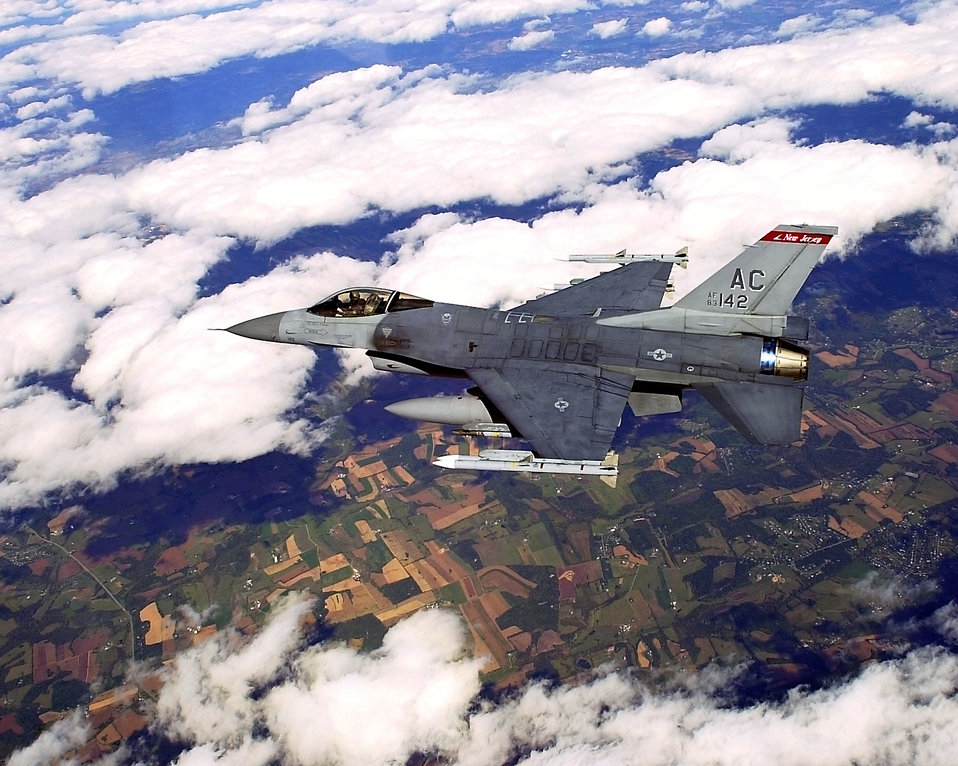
CAP

OPERATION NOBLE EAGLE -- An F-16C Fighting Falcon from the New Jersey Air National Guard’s 177th Fighter Wing flies a combat air patrol mission in the Northeastern United States in support of Operation Noble Eagle. More than 11,000 airmen -- the majority Air National Guard and Air Force Reserve -- have generated more than 7,500 sorties to patrol American skies 24/7 since Sep. 11.